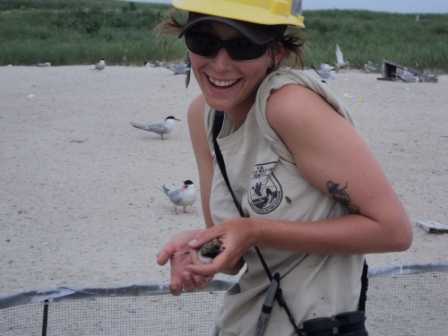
Bird Banding

An intern participates in bird banding at the Eastern Massachusetts National Wildlife Refuge Complex.